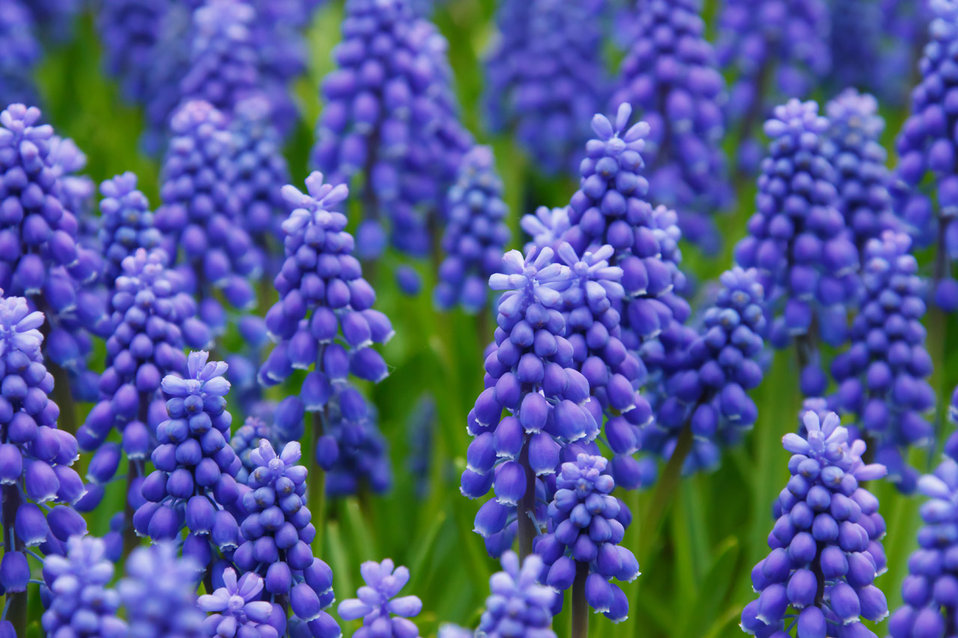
Blue grape hyacinths

Grape hyacinth flower bed in keukenhof.